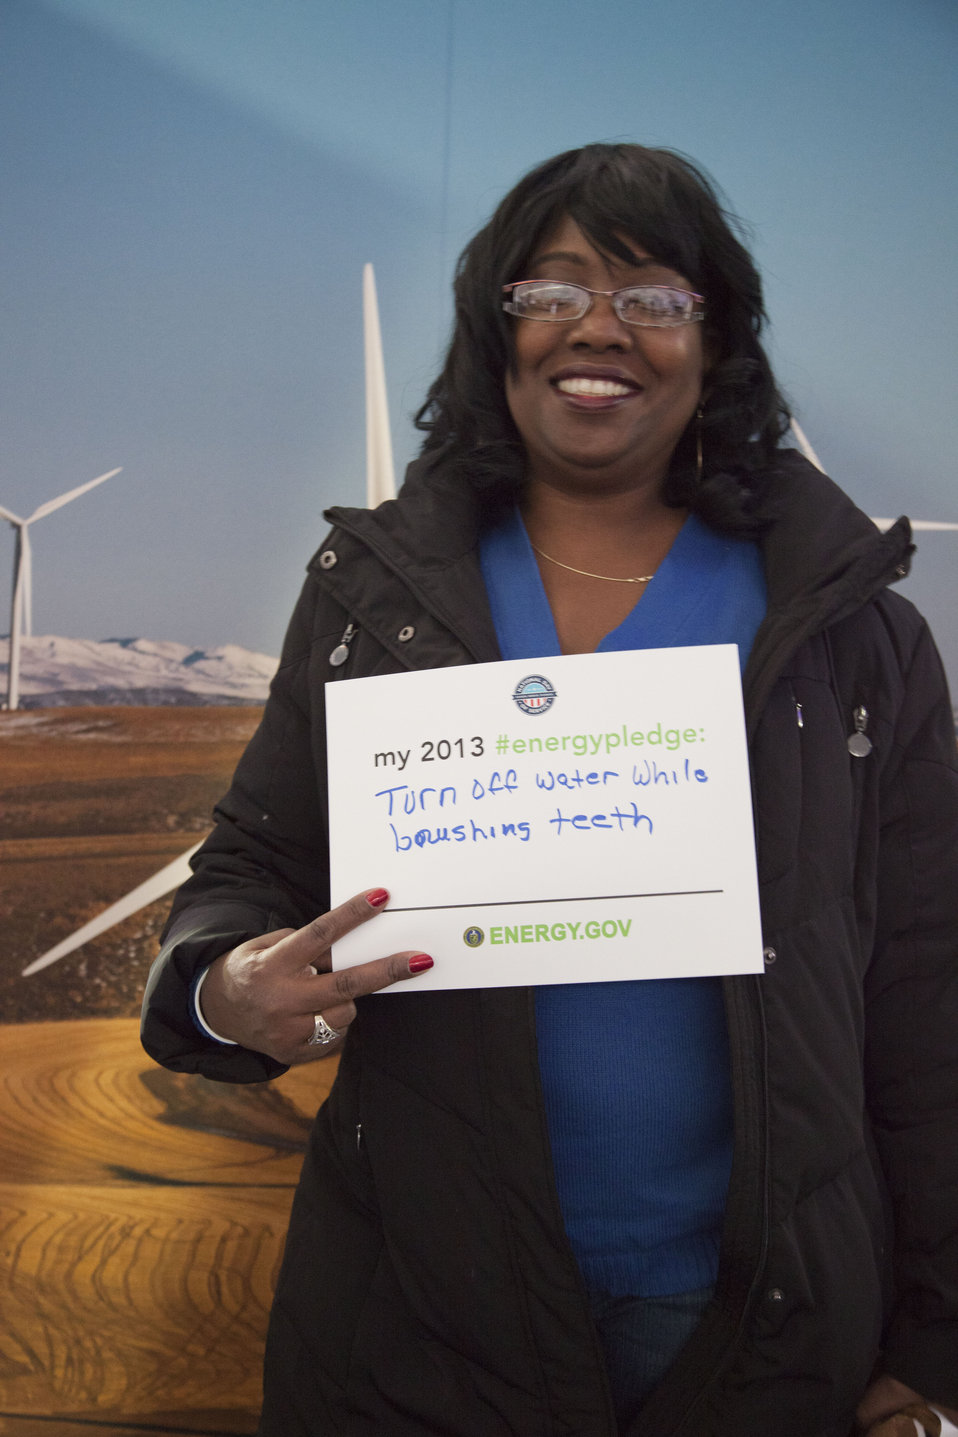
What's your #energypledge?